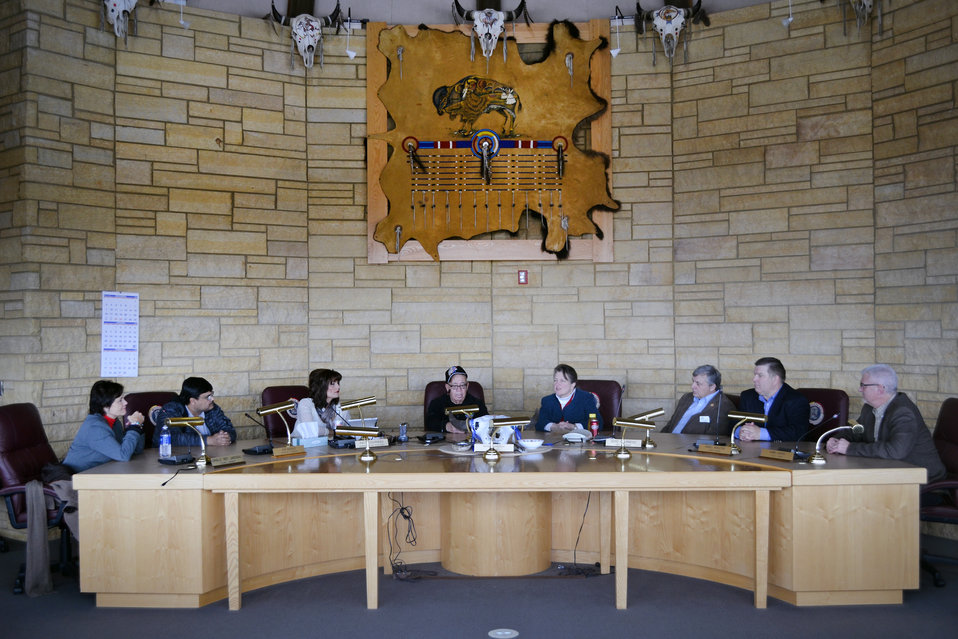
Agriculture Deputy Secretary Kathleen Merrigan, right of center, hosted two roundtable meetings in Lower Brule, SD on Feb. 28, 2013. Deputy Secretary Merrigan held a press availability with tribal leaders to reaffirm the Obama Administration’s commitment to Indian Country and highlight the U.S. Department of Agriculture’s (USDA) efforts to promote business development and job creation in rural South Dakota.